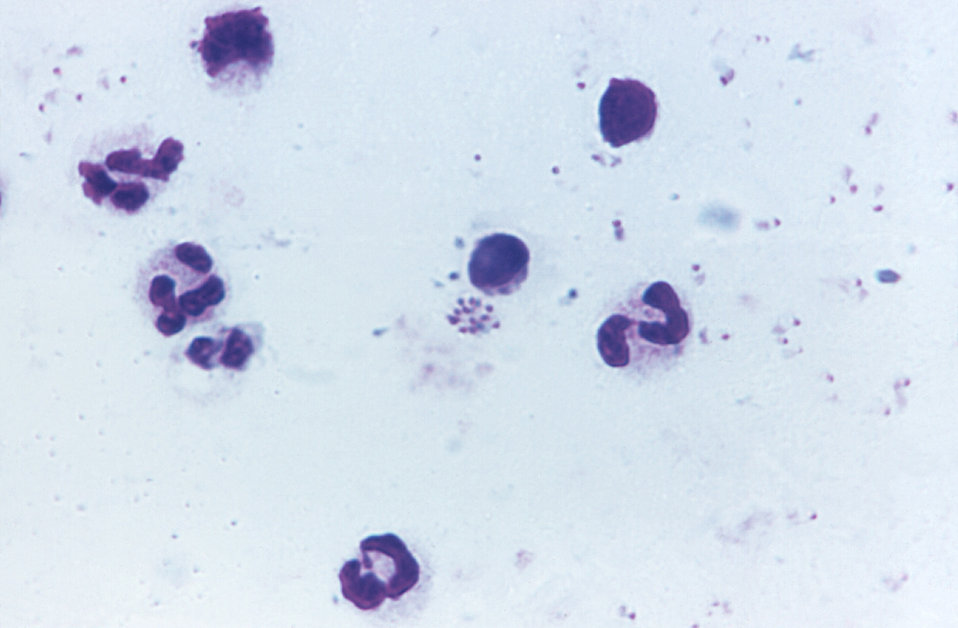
Magnified 1125X, this thick film, Giemsa-stained photomicrograph revealed the presence of numerous ring-staged Plasmodium falciparum trophozoites, and a centrally-located mature schizont.